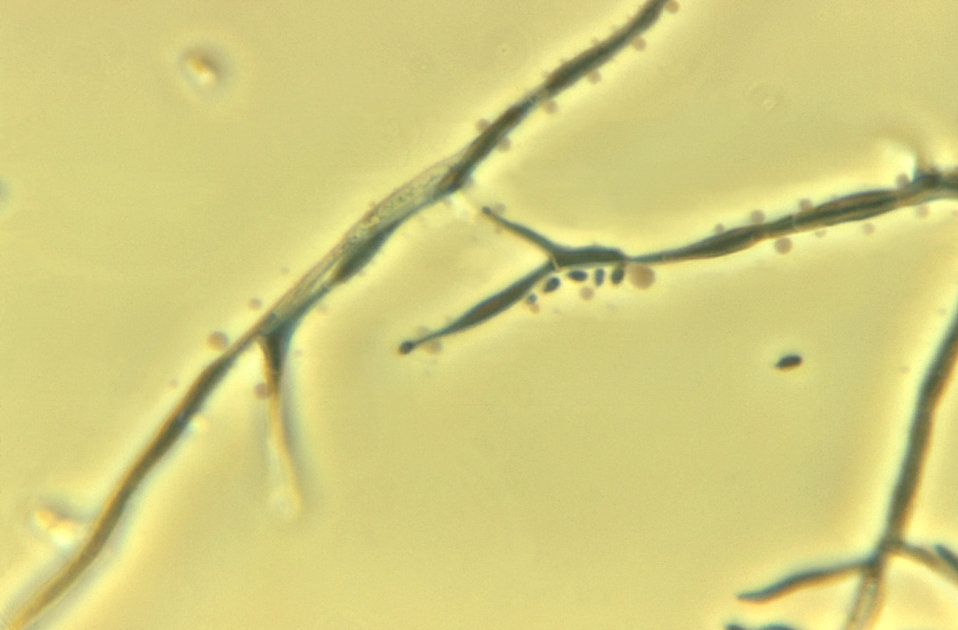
Magnified 1125X, this photomicrograph revealed morphologic details displayed by the fungal organism, Phialophora parasitica. A darkly-pigmented, filamentous fungus, which is known to be a cause of chromoblastomycosis and phaeohyphomycosis which affect the subcutaneous tissues, however, in the case of phaeohyphomycosis, many organ systems may be affected, even becoming disseminated throughout the body.